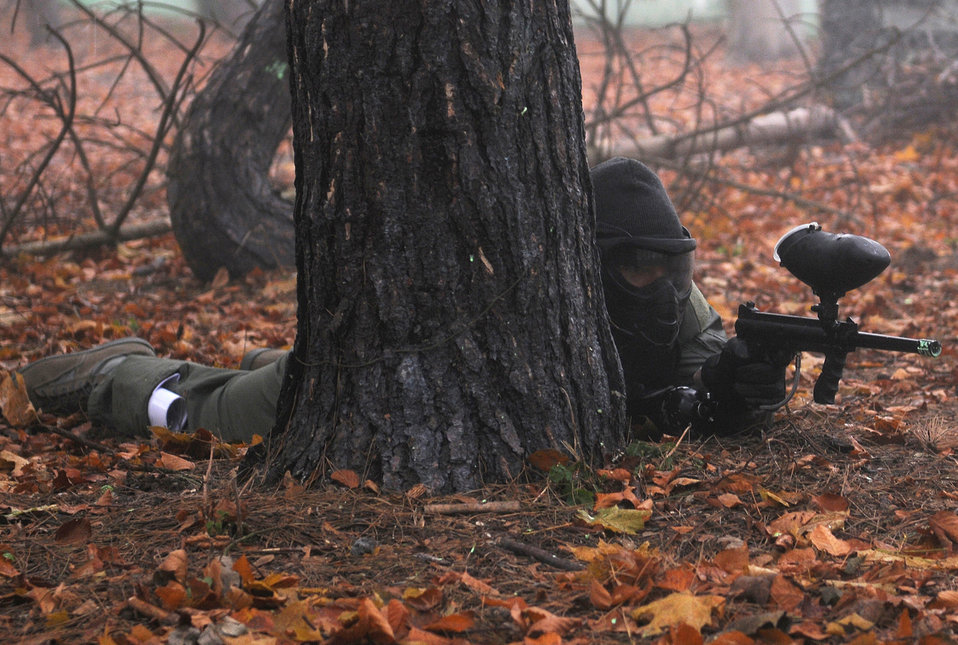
Cross-country training pools experience, skills

Capt. Alex Waxman plays paintball during Leader, Ethos and Air Power Training Day Dec. 6, 2010, at Royal Air Force Marham, England. This activity required the team members to work together to capture the flag of the opposing team through planning, communication and physical stamina. Captain Waxman is a member of the 351st Air Refueling Squadron.